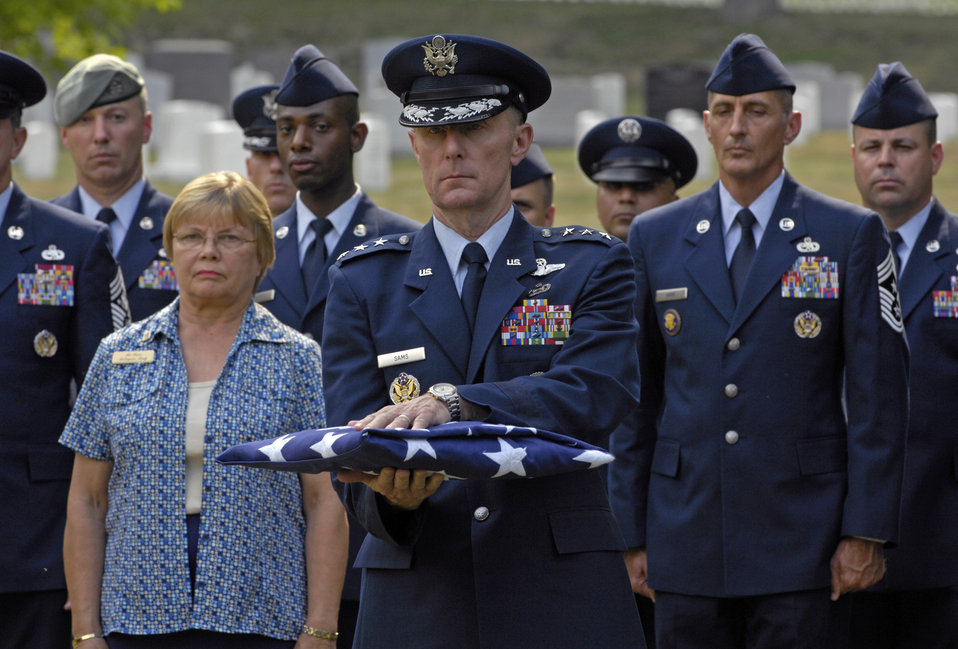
Chief Pfingston laid to rest at Arlington

Inspector General of the Air Force Lt. Gen. Ronald F. Sams holds the United States flag to present to the family of former Chief Master Sergeant of the Air Force Gary R. Pfingston at his burial site July 6 at Arlington National Cemetery, Va. The 10th CMSAF was born in Evansville, Ind., and entered the Air Force in February 1962. He passed away June 23 in San Antonio.